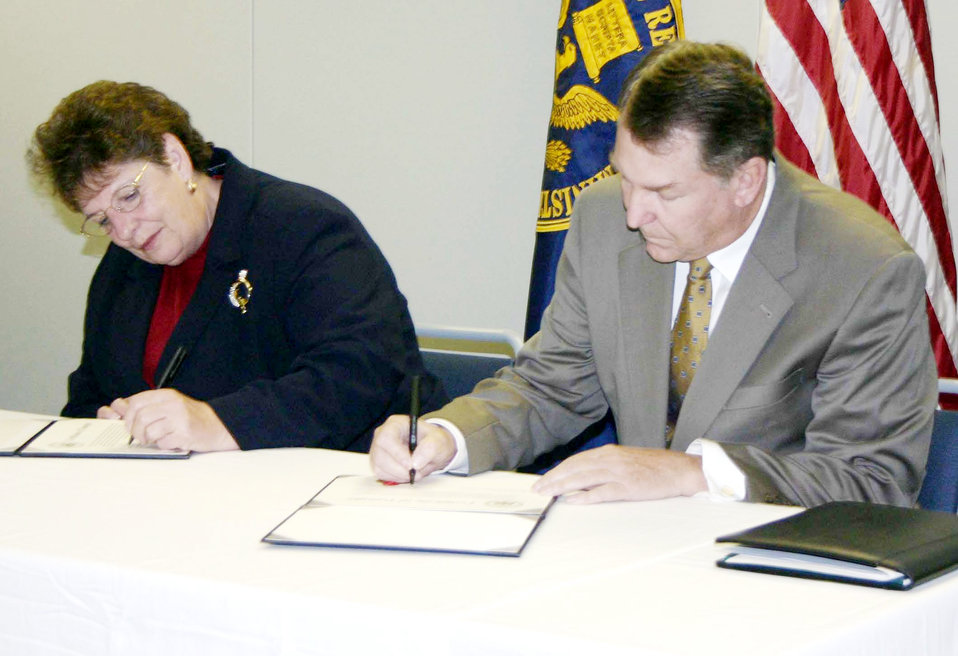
Records transfer marks historic milestone

Jo Hogue and Ron Hindman sign an official transfer document for approximately 177,000 official military personnel files reassigning ownership from the Air Force to the National Archives and Records Administration during a ceremony Nov. 18, 2009 in St. Louis. The transfer of records marked a milestone as the final service to make its historical documents a part of the public record. Ms. Hogue is the chief of master personnel and medical records branch at Randolph Air Force Base, Texas, and Mr. Hindman is the National Personnel Records Center director.